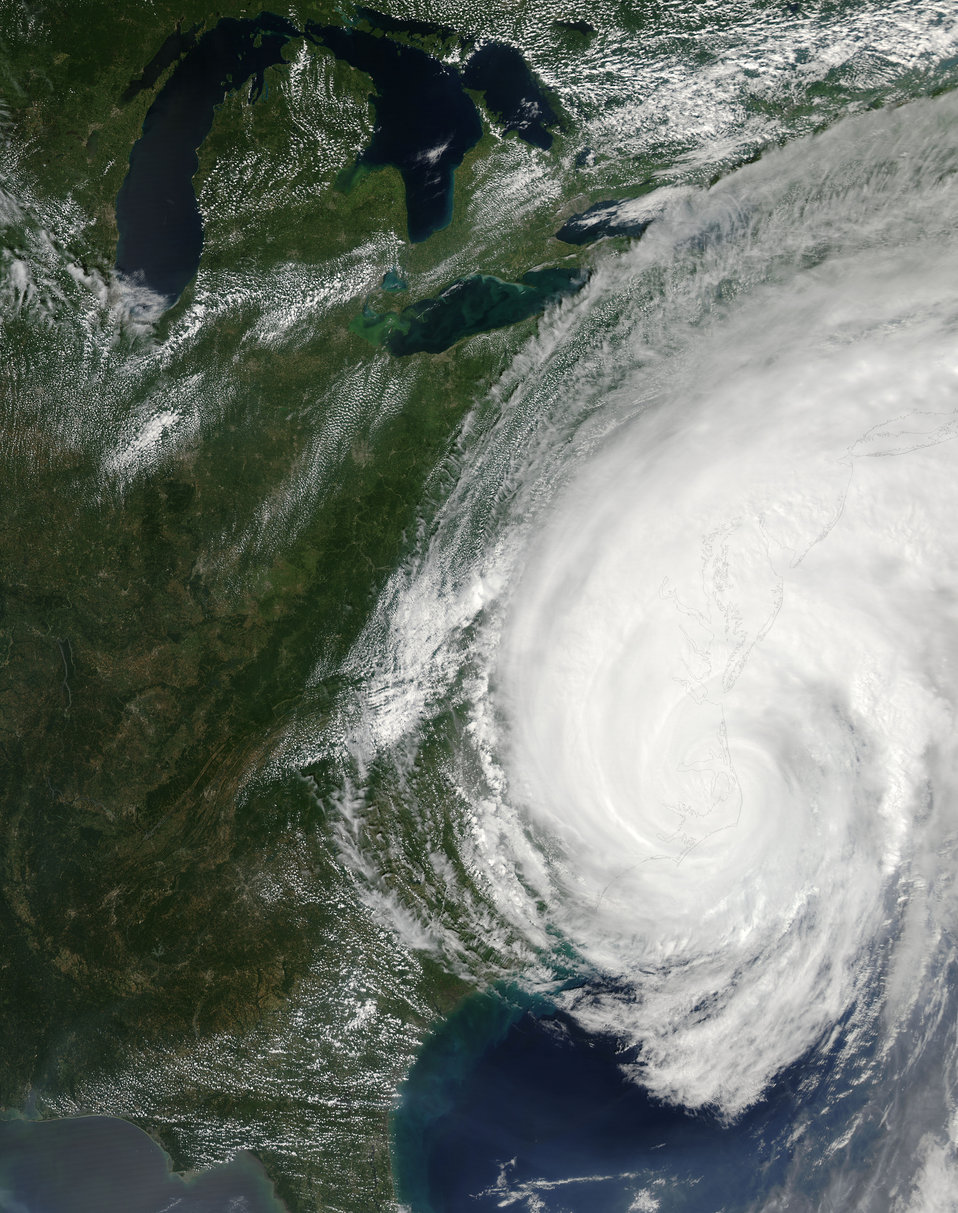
National Aeronautics and Space Administration, (NASA): Hurricanes/Tropical Cyclones